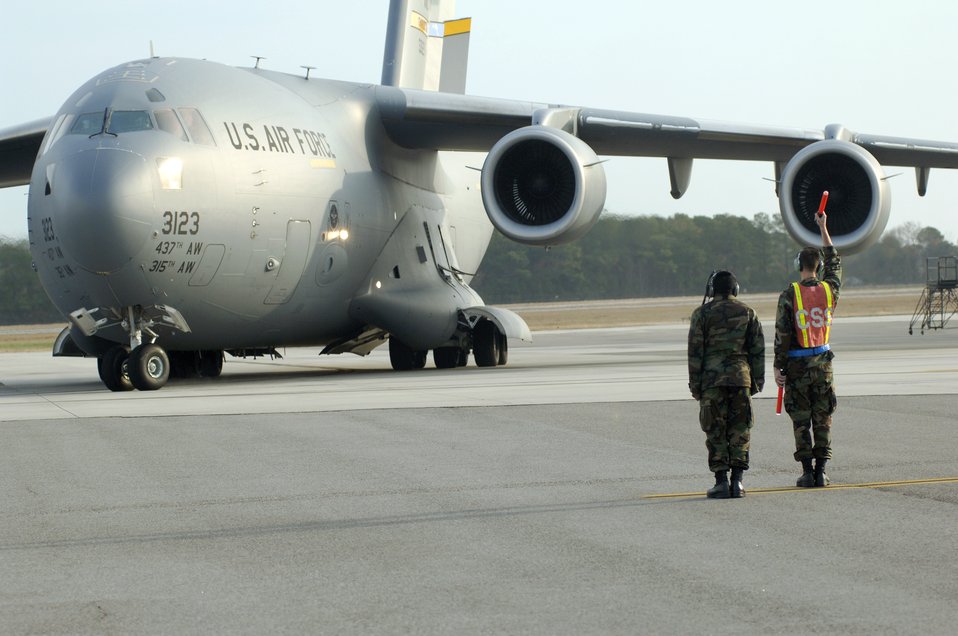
20 Charleston C-17s fill the sky

Staff Sgt. Christopher Brown and 2nd Lt. Kevin Ulrich marshal out the first of 20 C-17 Globemaster IIIs Dec. 21 assigned to Charleston Air Force Base, S.C. Aircrews consisting of active-duty Airmen and reservists train simulating the complexity of this type of mission. The traning mission included airdrops over North Auxiliary Airfield in Orangeburg, S.C., aerial refueling and low-level tactical training. Charleston AFB members launched the largest formation of C-17's to take flight from a single base. Sergeant Brown is from the 315th Aircraft Maintenance Squadron and Lieutenant Ulrich is assigned to the 437th AMXS.